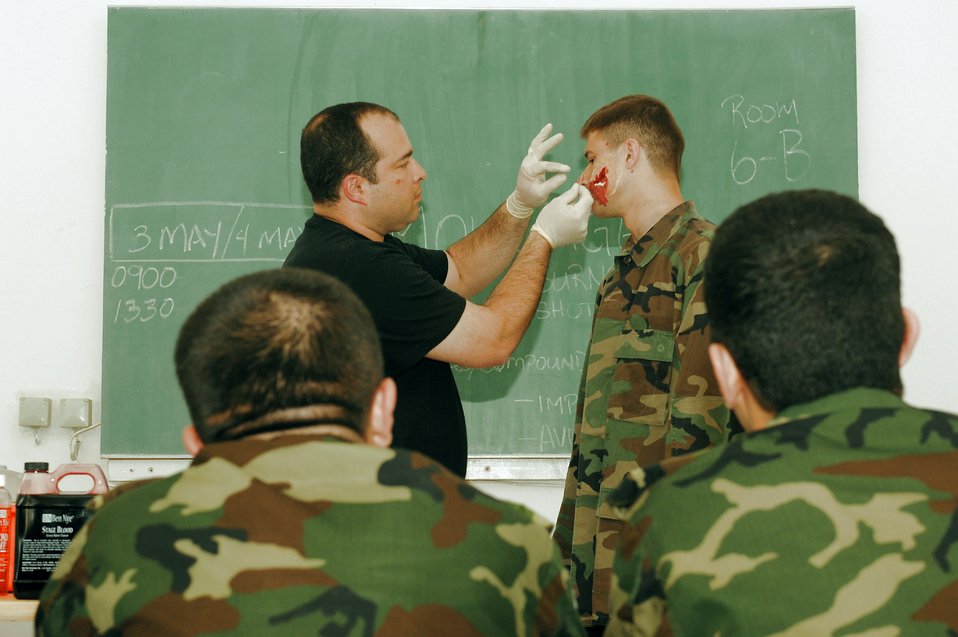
Medical training exercise supports partnership for peace

Tech. Sgt. Stephen DeReis demonstrates the application of moulage on Cadet Abbasov Maksim May 3 for cadets from the Military Medicine Faculty of the Azerbaijan Medical University during the 2008 Medical Training Exercise in Central and Eastern Europe. MEDCEUR is a Joint Chiefs of Staff regional/multilateral exercise sponsored by U.S. European Command. Croatia is hosting the 2008 exercise which has drawn about 400 multi-nationals in support of the Partnership for Peace initiative. Sergeant DeReis is with the 458th Expeditionary Medical Squadron.